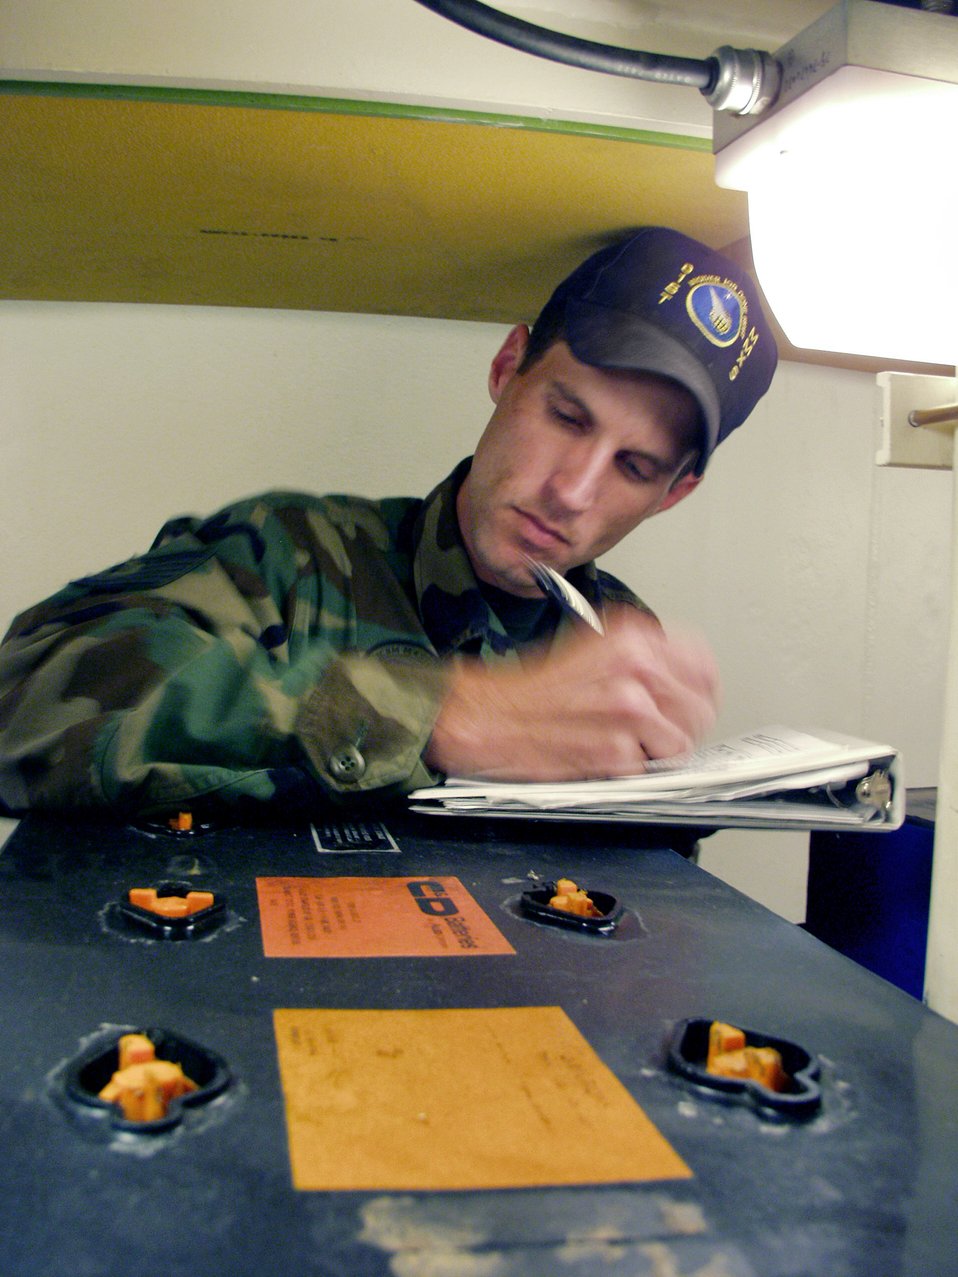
Working 'down in the hole'

Tech. Sgt. Adam Chandler takes inventory of 32-volt batteries that ring a Minuteman III intercontinental ballistic missile launch tube during the annual code change Aug. 25. The NCO is a Minuteman III missile handling team chief with the 91st Missile Wing at Minot Air Force Base, N.D.